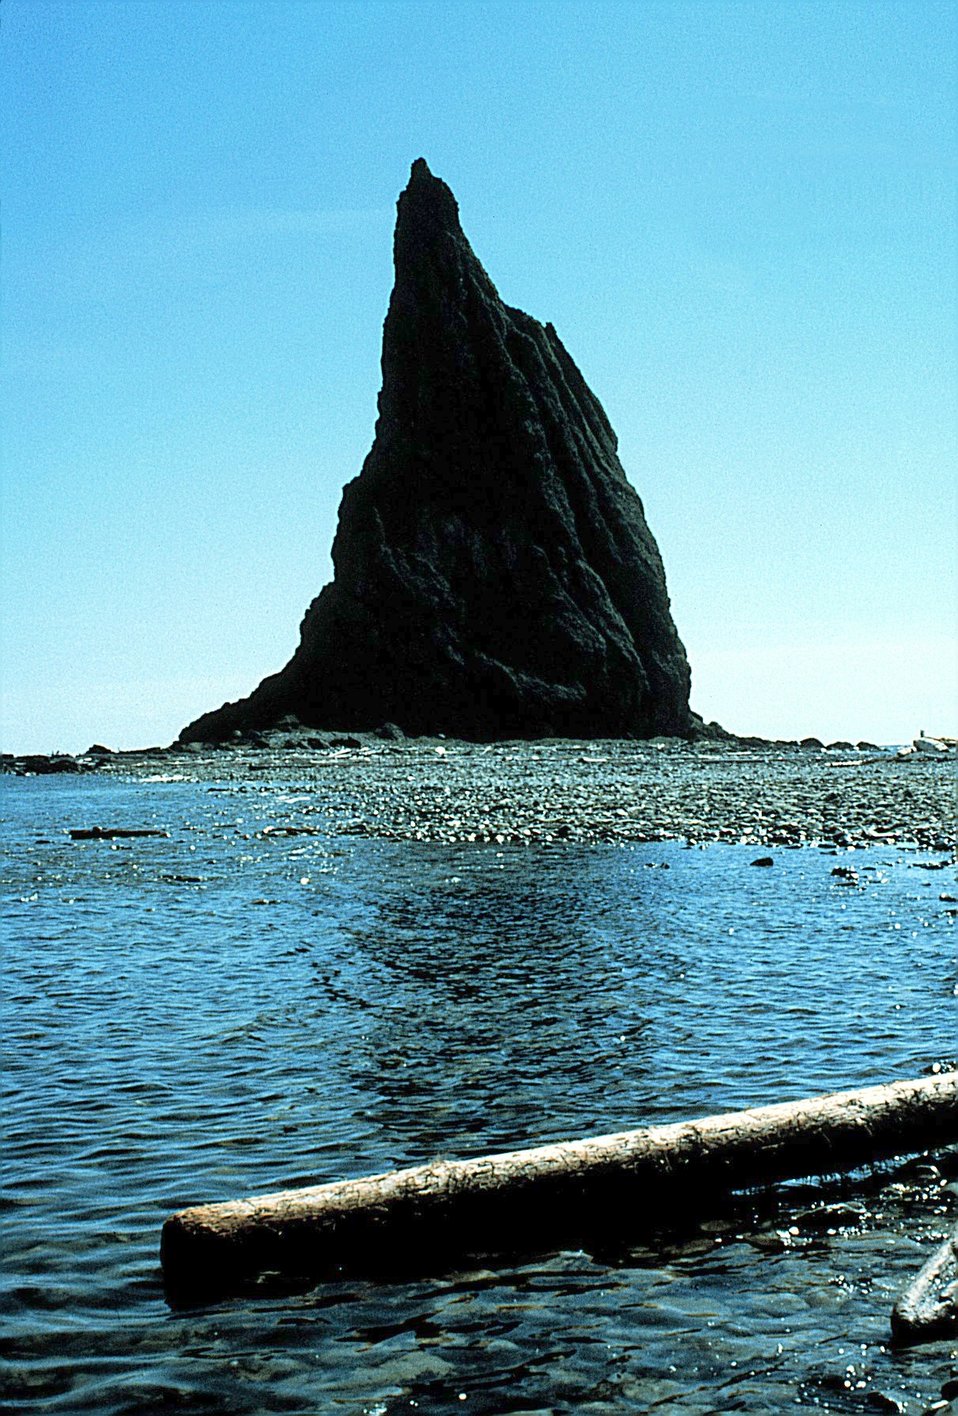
Cape St. Elias, Alaska